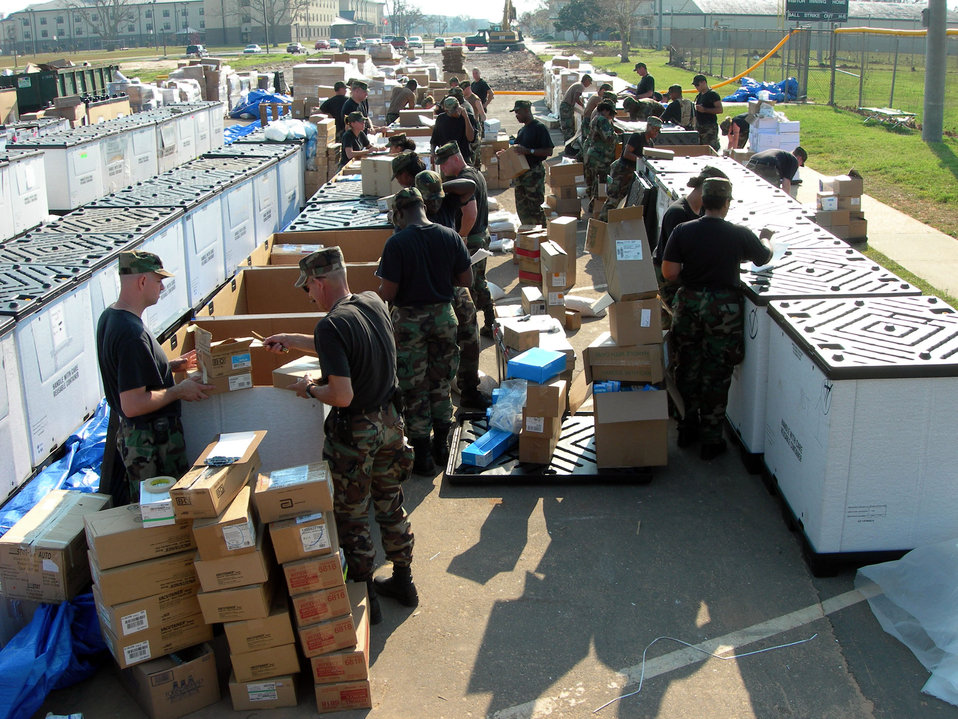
97th AEG stands up at Keesler

KEESLER AIR FORCE BASE, Miss. -- Airmen with the 97th Air Expeditionary Group take inventory and organize medical supplies that will be used to restock veterinarian and disaster medical assistance teams established along the Gulf Coast by the Federal Emergency Management Agency. The group, comprising Airmen throughout the United States who began arriving Sept. 6, was established to provide humanitarian assistance to those affected by Hurricane Katrina.